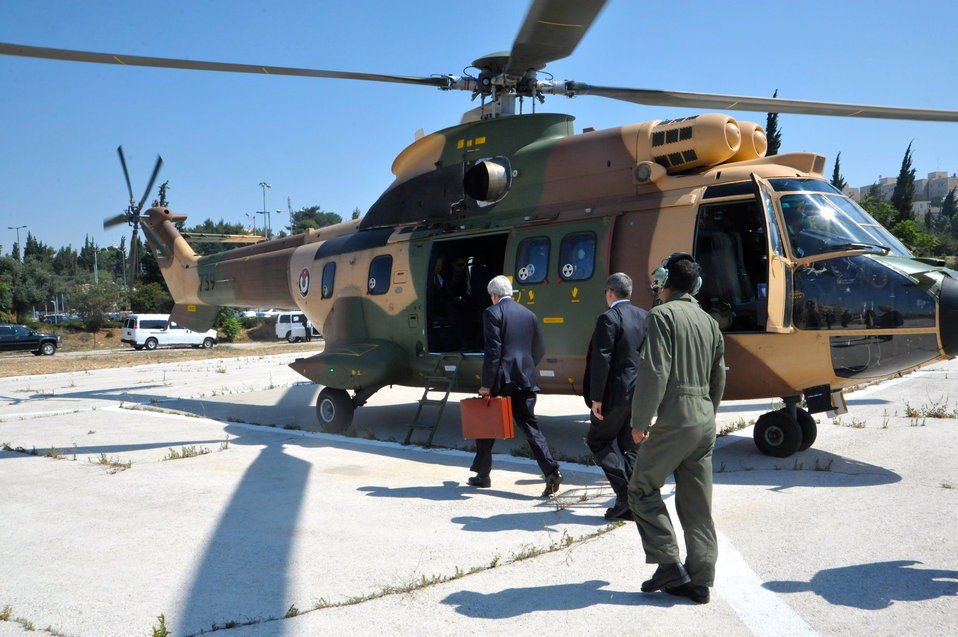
Secretary Kerry Approaches a Jordanian Helicopter

U.S. Secretary of State John Kerry approaches a Royal Jordanian Air Force helicopter for a flight from Jerusalem to Amman, Jordan, on June 29, 2013.